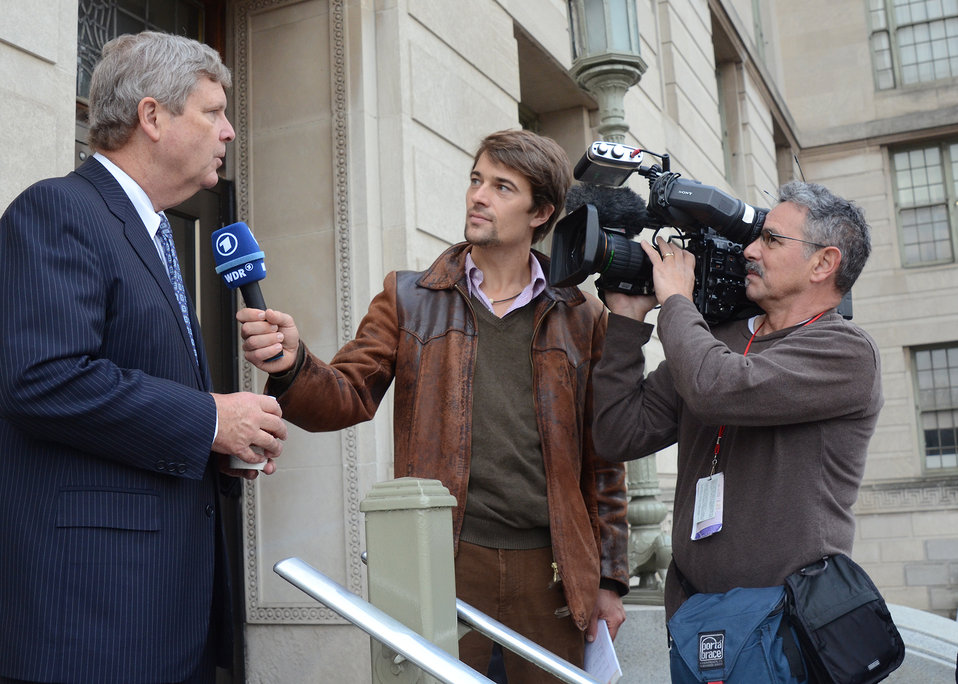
Agriculture Secretary Tom Vilsack speaks to reporters on the steps of the U.S. Department of Agriculture's South Building on Thursday, Oct. 18, 2013.